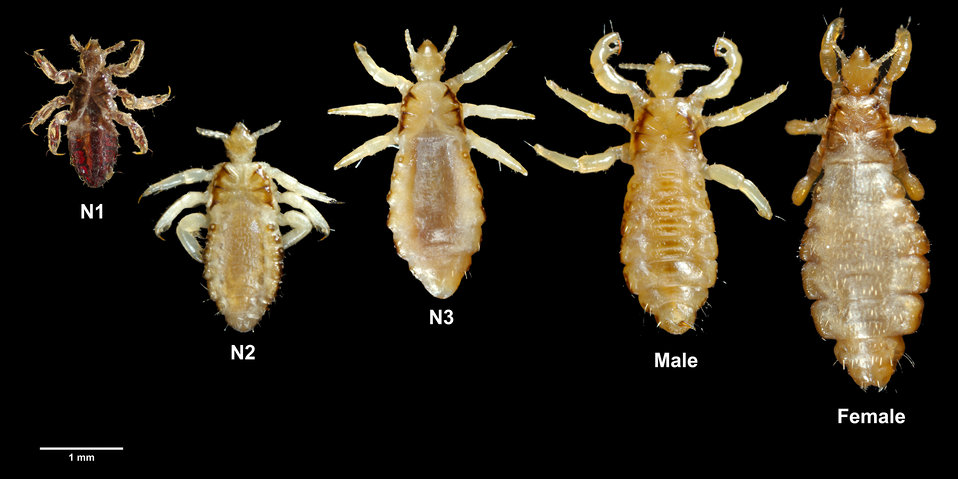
This 2006 image depicted five body lice, Pediculus humanus var. corporis, which from left to right included three nymphal-staged lice, beginning with a stage N1, then N2, and thirdly a N3-staged nymph, followed by an adult male louse, and finally an adult female louse.